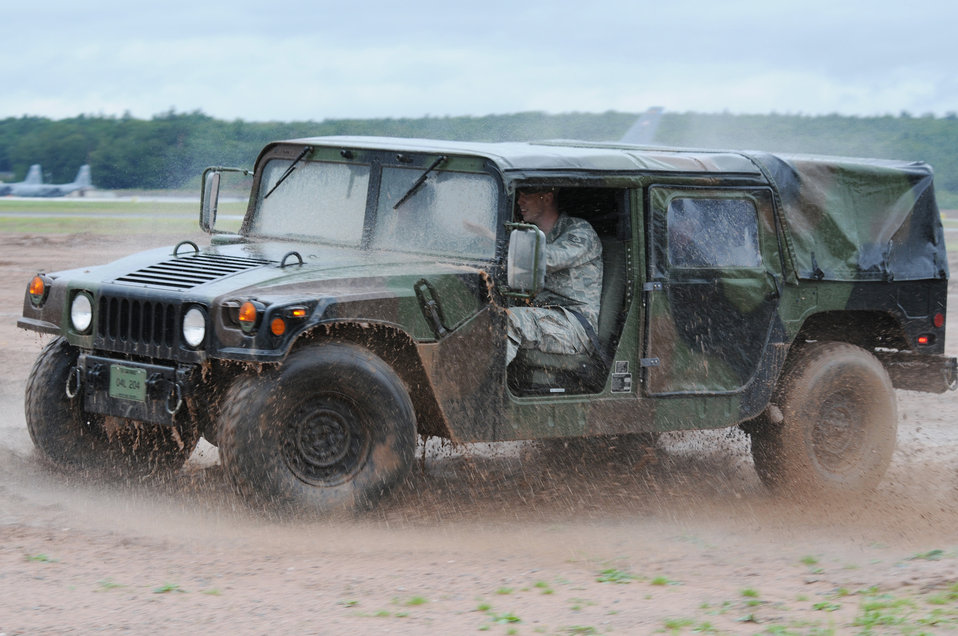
British cadets nurture 'spirit of adventure' at Ramstein

Staff Sgt. Chris Harwood trains Royal Air Force air cadets on Humvee operations during a July 14 visit to Ramstein Air Base, Germany. RAF cadets visited Ramstein AB for a week of leadership development and contingency skills training. Sergeant Harwood is a 86th Construction and Training Squadron instructor.